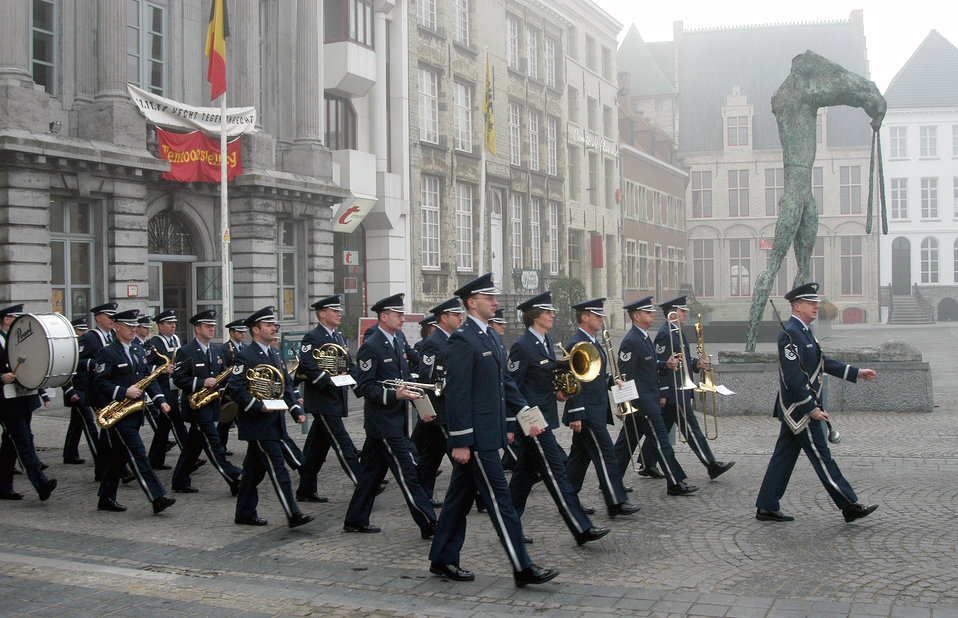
Remembering World War I veterans

OUDENAARDE, Belgium -- U.S. Air Forces in Europe Band airmen march here as part of Veterans Day activities Nov. 11. The town is near World War I battlefields and Flanders Field American Cemetery. The ceremony honored American, French, British and Belgian forces that died fighting German forces during the war. In all, more than 4,700 American servicemen died fighting in Belgium during the war.